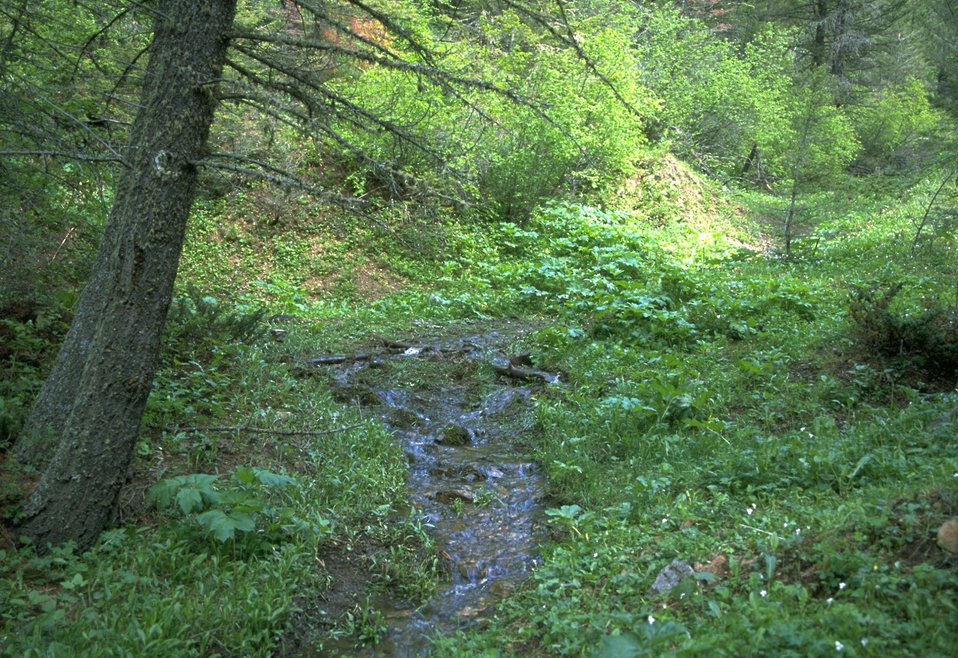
Riparian area in the Judith Mountains